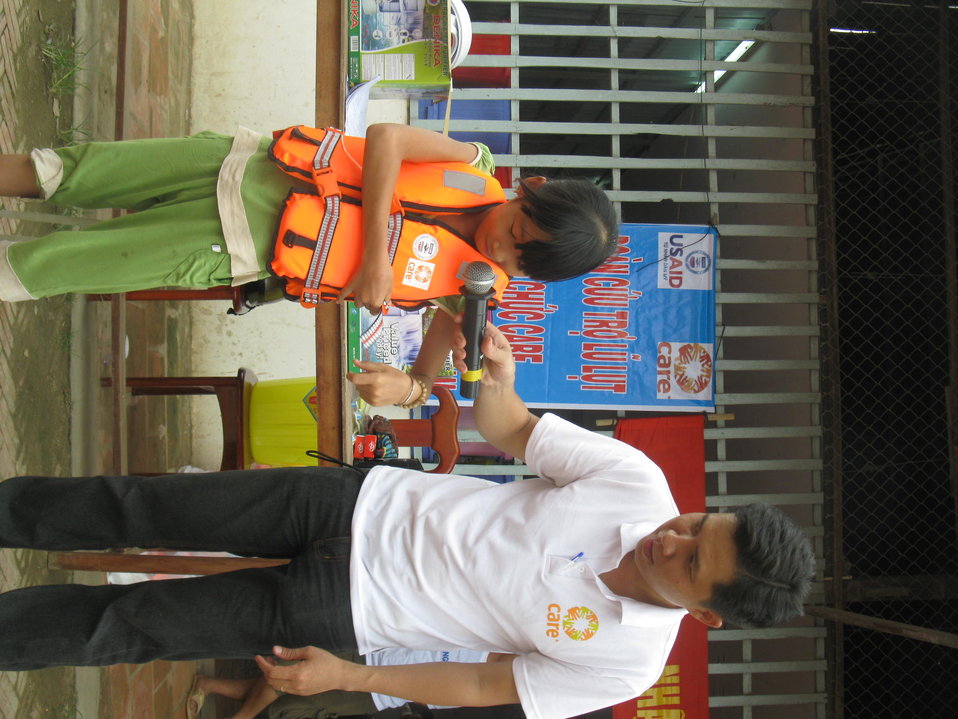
USAID Relief distribution in Giang An Province

November 8, 2011